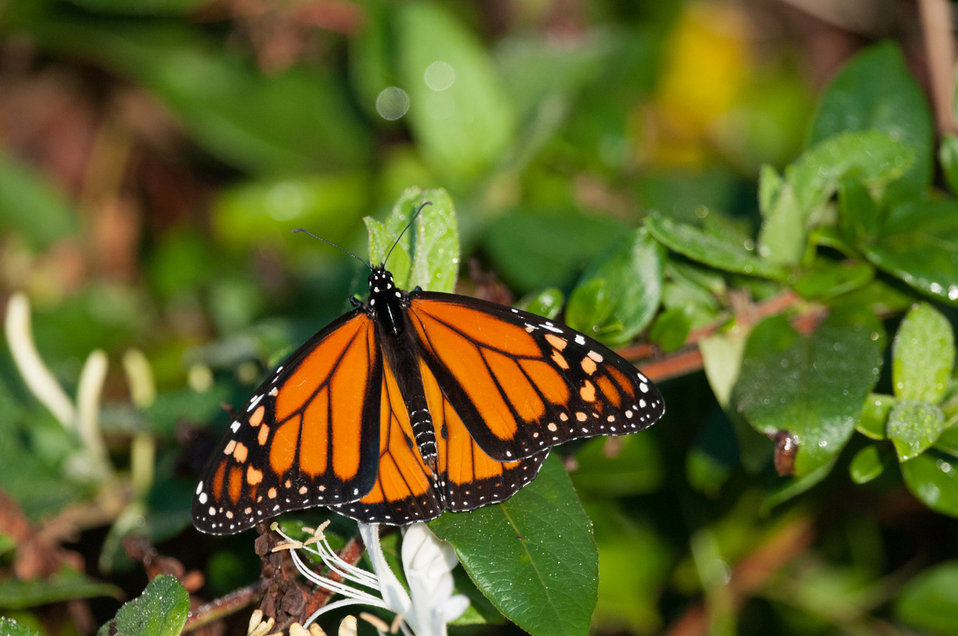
Monarch butterfly

Photographed in Jamestown, RI.